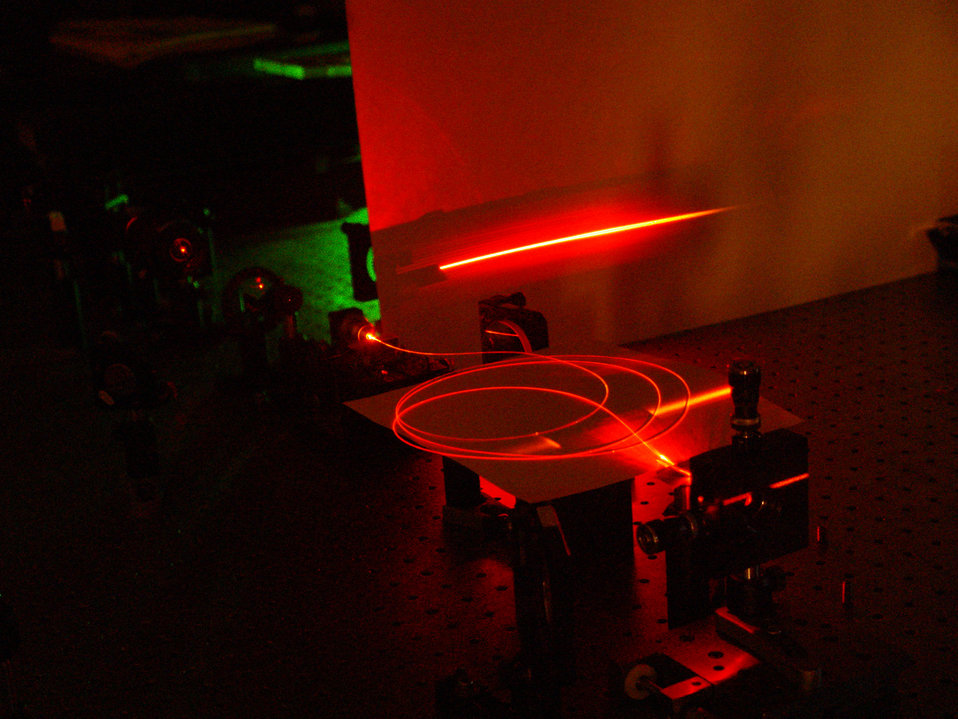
NIST's New Efficient 2 Photon Source

A microstructured optical fiber in NIST's new paired-photon source delivers high numbers of photon pairs over a broad bandwidth with low noise, all in a compact device for quantum communication devices.